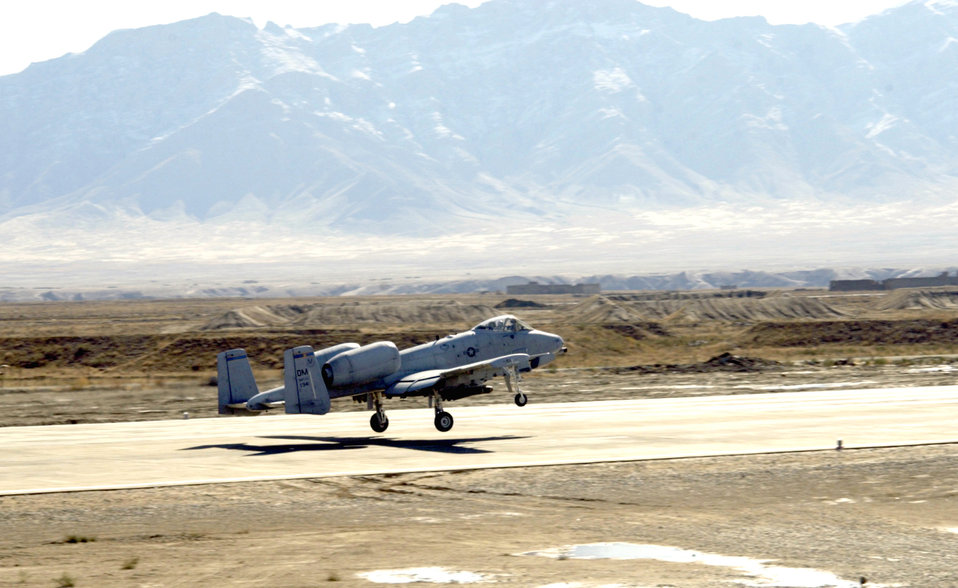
Operation Mountain Resolve

BAGRAM AIR BASE, Afghanistan -- An A-10 Thunderbolt II takes off here Nov. 17 to provide close-air support to the Army's 10th Mountain Division as they pursue Taliban and al-Qaida forces during Operation Mountain Resolve. The A-10 is from Davis-Monthan Air Force Base, Ariz.